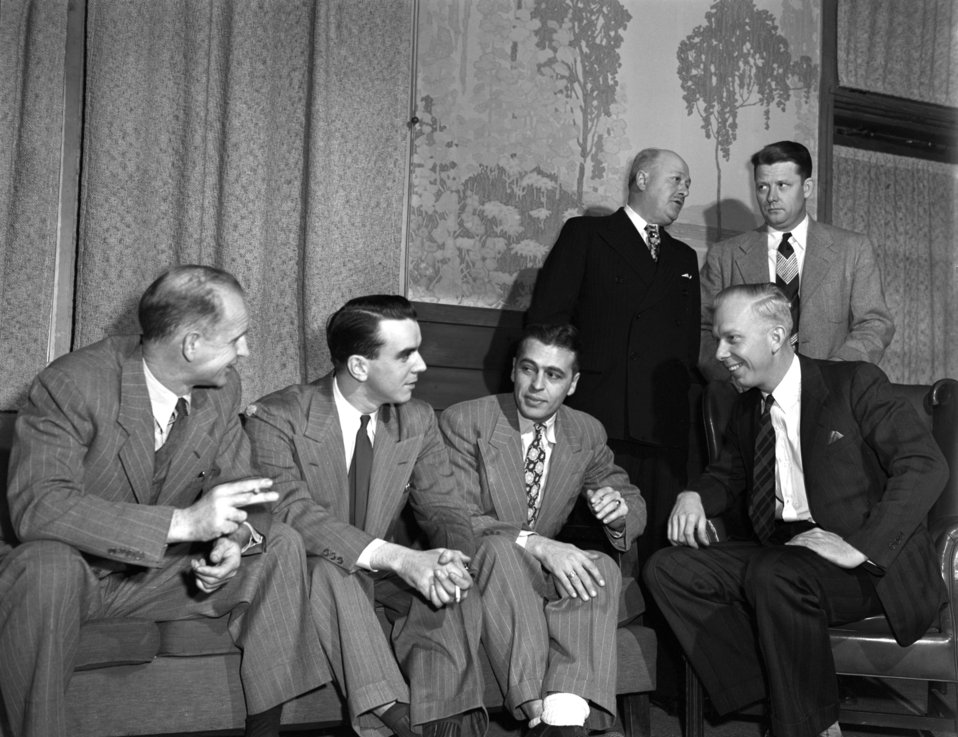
Meeting Oak Ridge 1947

3276-2 DOE photo Ed Westcott 2-1-1947 L to R Buford Lewallen, B.C. Bohannon, George Ridenour, George W. Leonard, R.A. Walker, and Max Stansbury Oak Ridge Tennessee